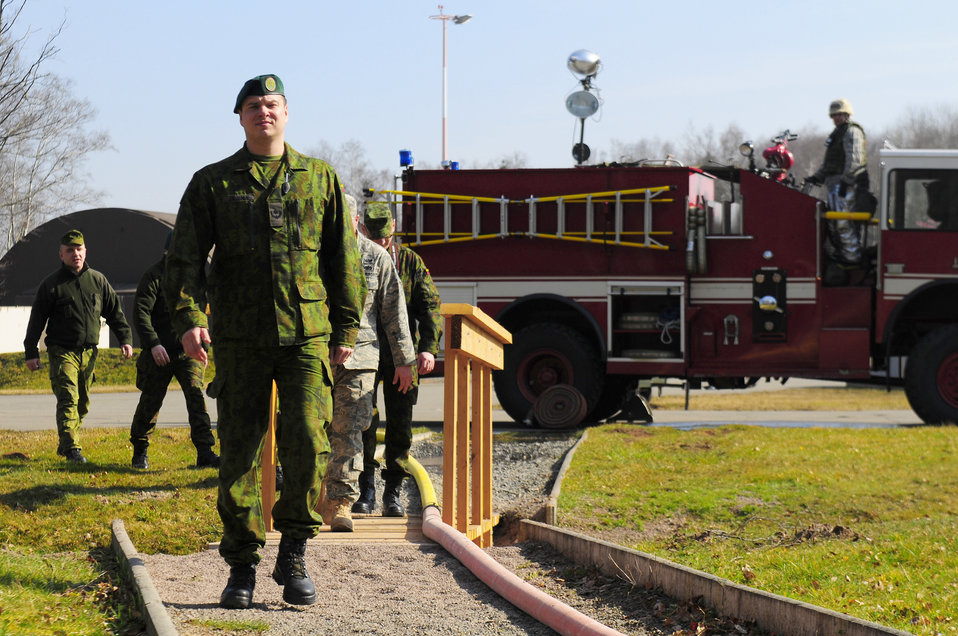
Silver Flag

Lithuanian air force officers approach a simulated fire drill March 15, 2011, during Silver Flag at Ramstein Air Base, Germany.